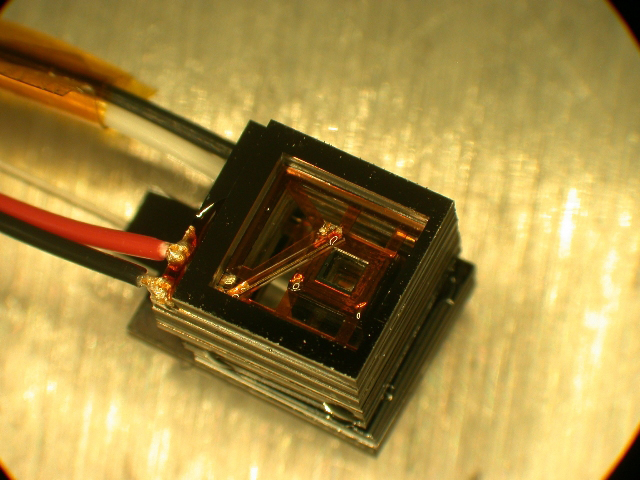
Magnetic Sensor

NIST's miniature magnetic sensor is about the size of a sugar cube. The lid has been removed to show the inner square cell, which contains a gas of rubidium atoms. The diagonal bar is an electrical connection to the cell's heaters, which are powered by the red, black and white electrical wires. The clear optical fiber extending from the middle bottom of the sensor connects to a control box.